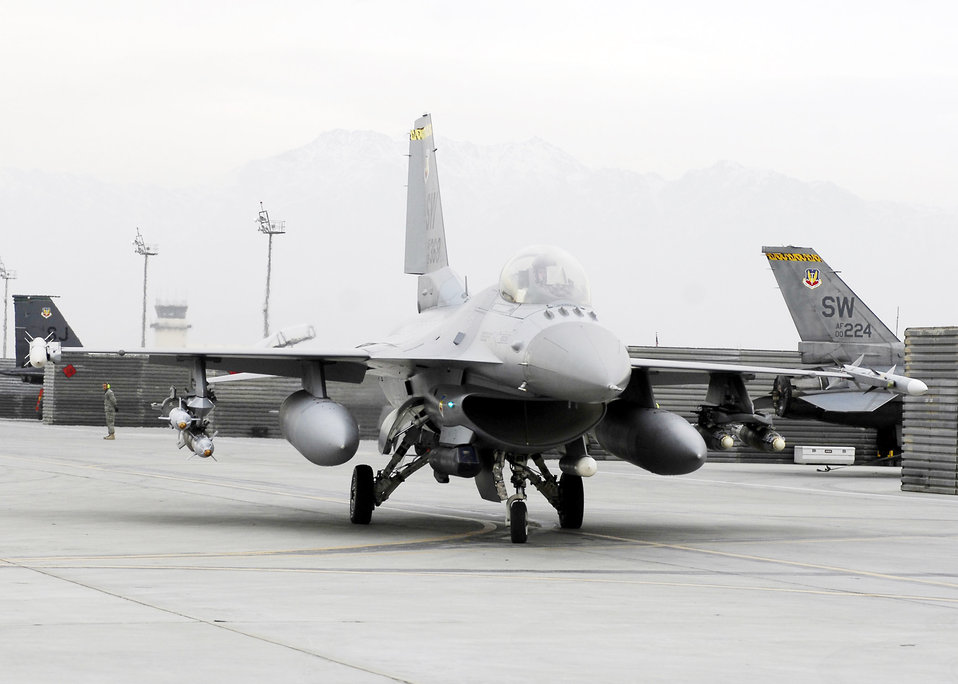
Looking to prowl

An F-16 Fighting Falcon from the 79th Expeditionary Fighter Squadron prepares to take off from Bagram Airfield, Afghanistan, Dec. 26, 2009.